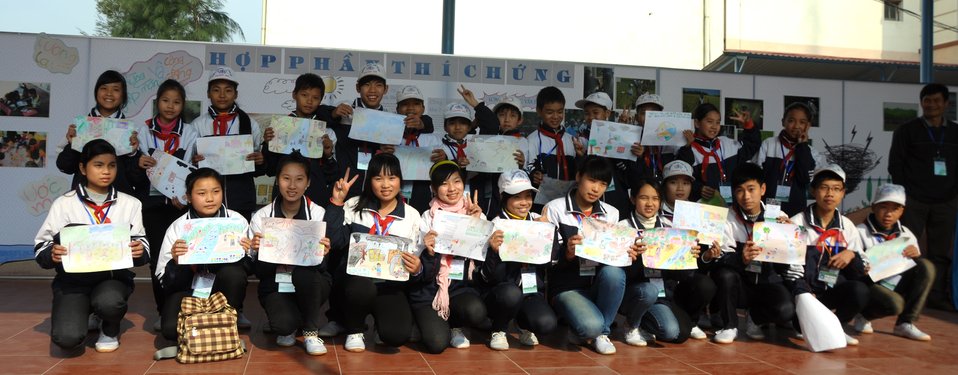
Nam Dinh school students draw paintings to raise awareness about climage change.

Quat Lam, Nam Dinh. January 16, 2014.